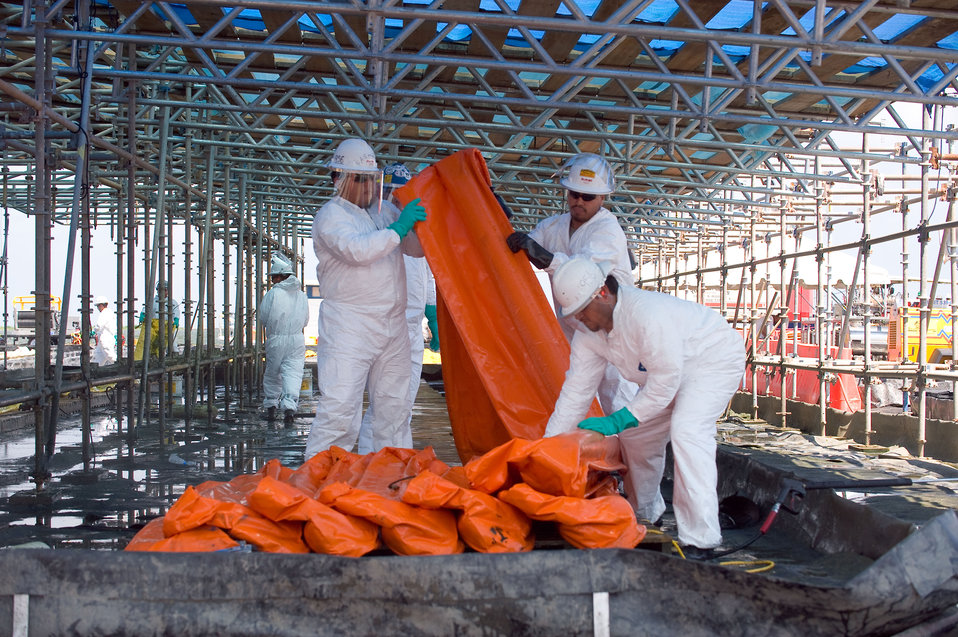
August 7, Used boom is washed and stacked for reuse

Work crews meticulously pressure wash and inspect used boom for possible reuse.